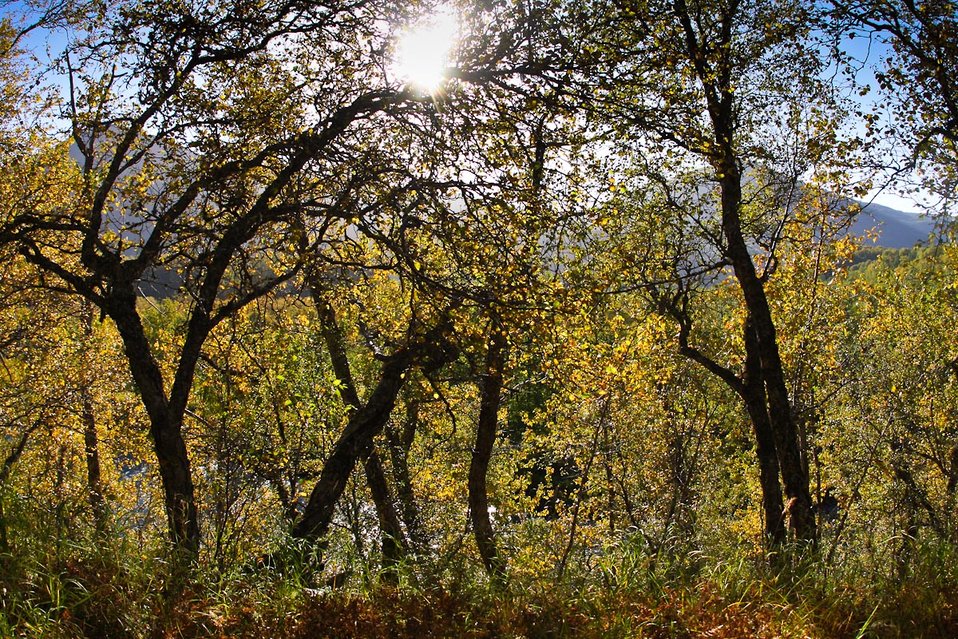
Cottonwoods in the fall

Lisa Hupp/USFWS
Source: Kodiak NWR
Uganik River